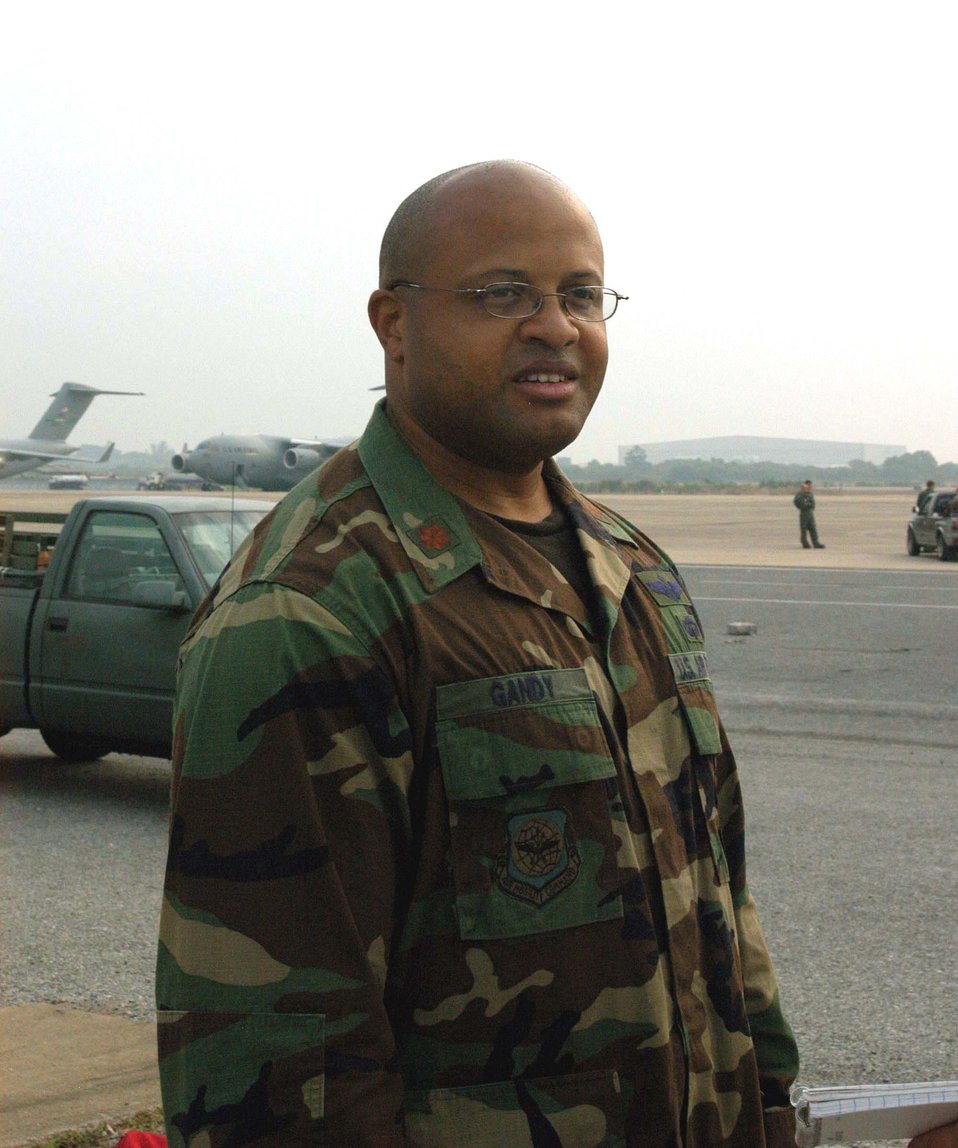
Airmen keep cargo, people moving

UTAPAO, Thailand -- Maj. Jaye Gandy is the tanker airlift control element operations chief here. He is normally attached to the 615th Air Mobility Operations Squadron at Travis Air Force Base, Calif. His team is responsible for moving humanitarian aid, supplies and people.